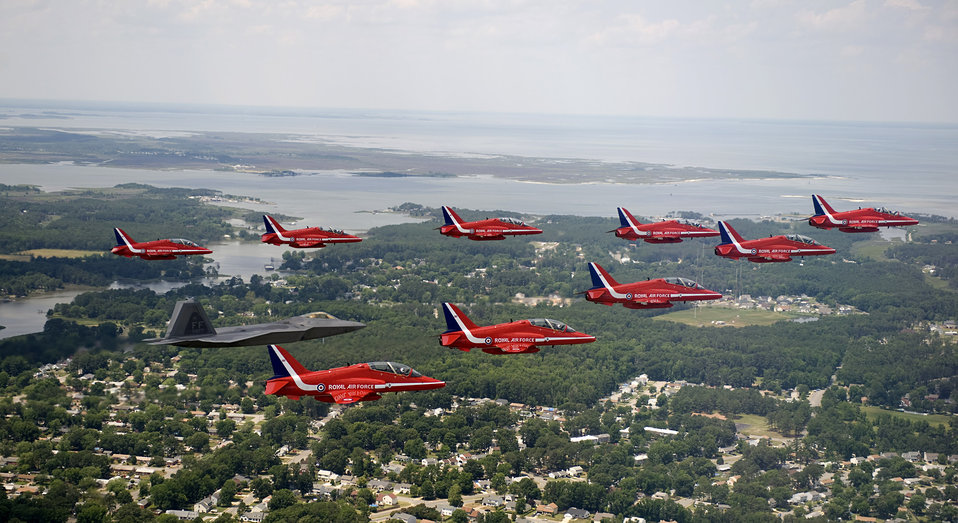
Raptor joins Red Arrows

Maj. Paul Moga flies in formation in an F-22 Raptor with the Royal Air Force Aerobatic Team, The Red Arrows, during an afternoon practice flight June 18 at Langley Air Force Base, Va. The aircraft will perform at AirPower over Hampton Roads, the Langley AFB airshow, which is scheduled for June 20 to 22. Major Moga is an F-22 Demonstration Team pilot.